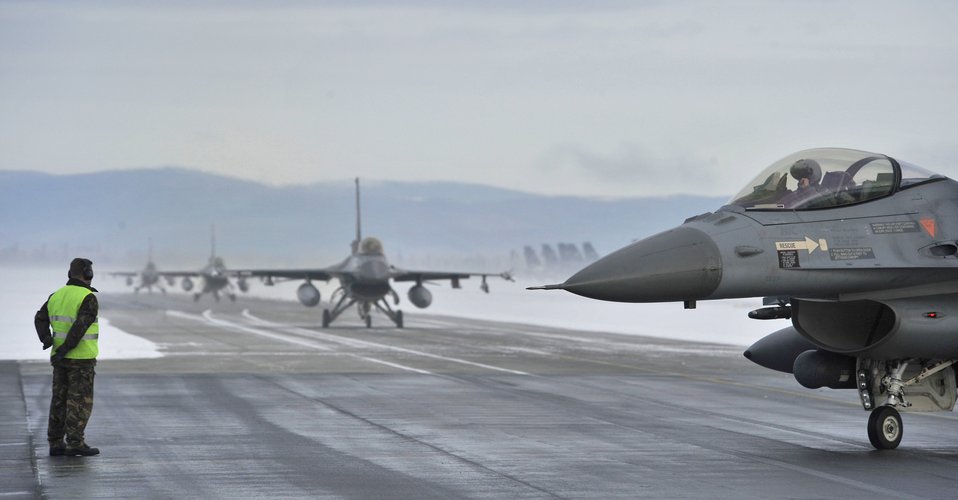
F-16s at Eielson

F-16A's from the Royal Netherlands Air Force taxi to the runway April 8, 2011, at Eielson Air Force Base, Alaska.